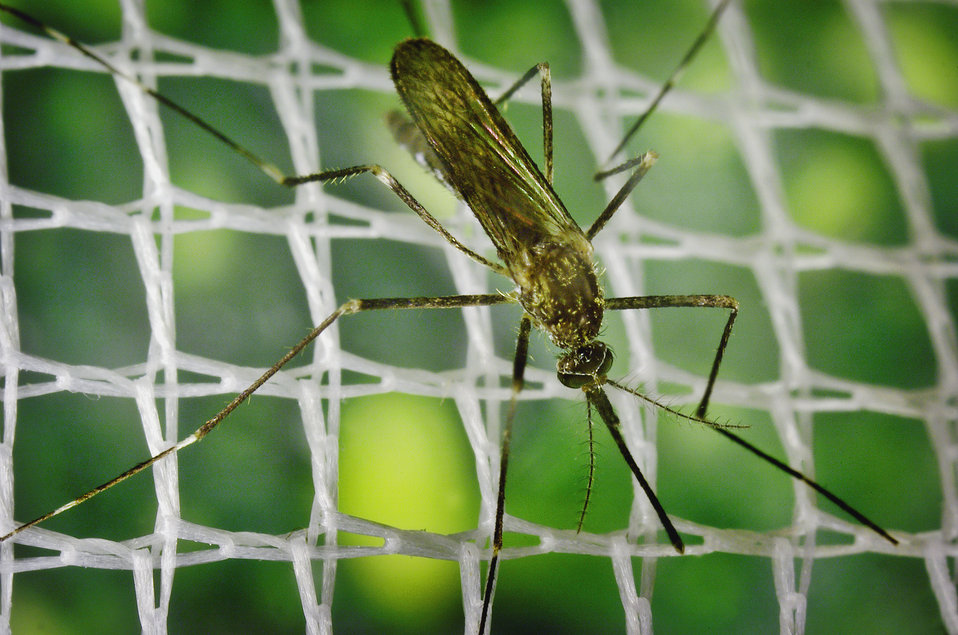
The mosquito pictured here in this 2005 photograph, was until recently known as Aedes japonicus, and is now labeled Ochlerotatus japonicus. This particular specimen was a member of the Notre Dame colony. Oc. japonicus was initially collected in the United States in New York and New Jersey, in 1998.